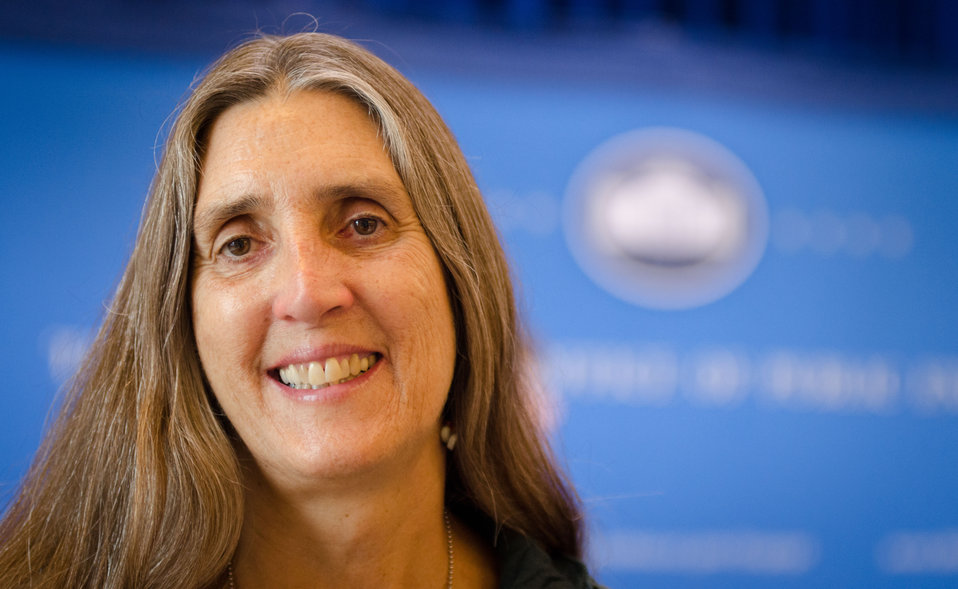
Mandela MarketPlace Executive Director Dana Harvey is one of eleven honorees recognized for their efforts to reduce hunger and increase food security in the U.S. and internationally at the White House Champions of Change Strengthening Food Security at Home and Abroad Event held at the White House on Thursday, September 6, 2012.